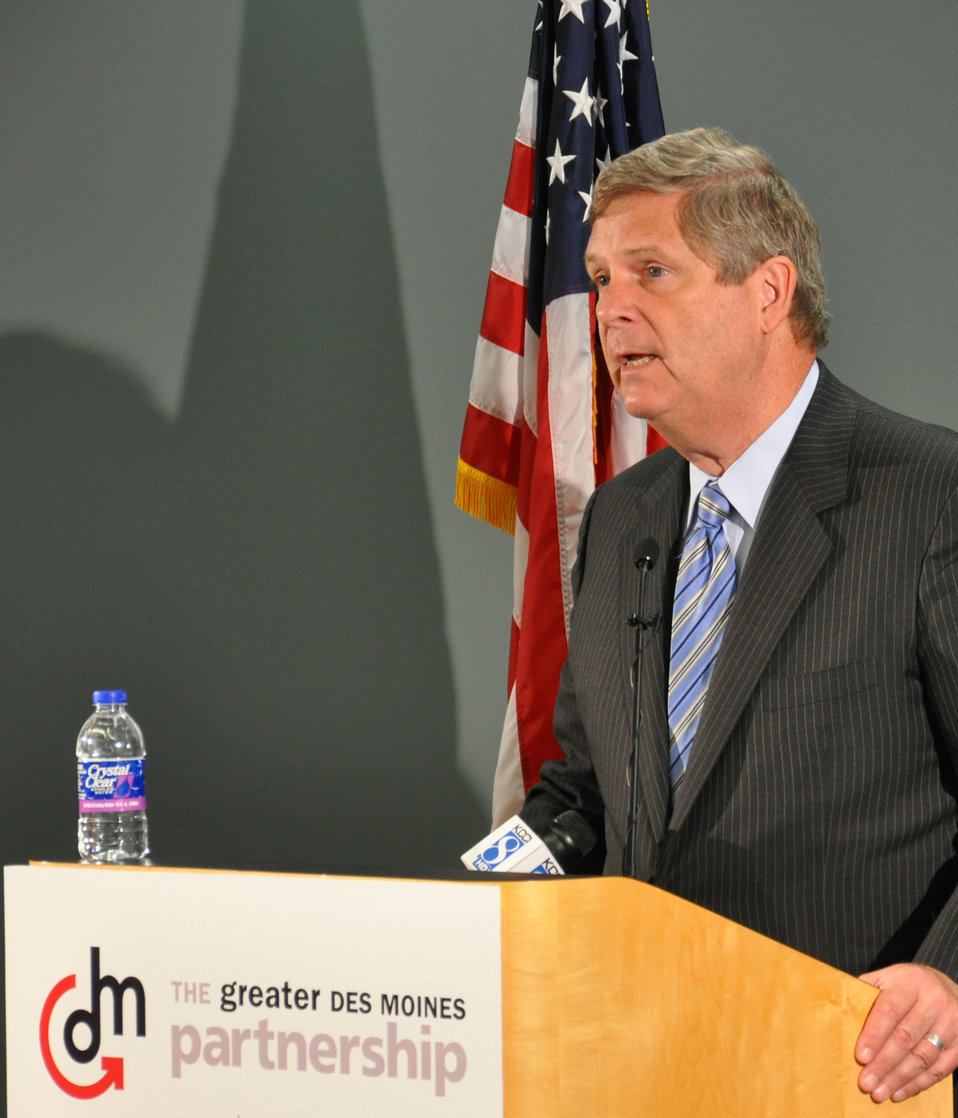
Agriculture Secretary Tom Vilsack meeting with business and community leaders in Des Moines, Iowa, on Tuesday, June 12, 2012 discussed how the continuing demand for American food and agricultural products abroad has led to the three best consecutive years for U.S. farm exports in our nation's history.

Vilsack also highlighted a report released this week by the White House Rural Council and the U.S. Department of Agriculture which notes progress that has been made in the agricultural economy and details steps the Obama Administration has taken to help strengthen the farm economy and support jobs in rural America.